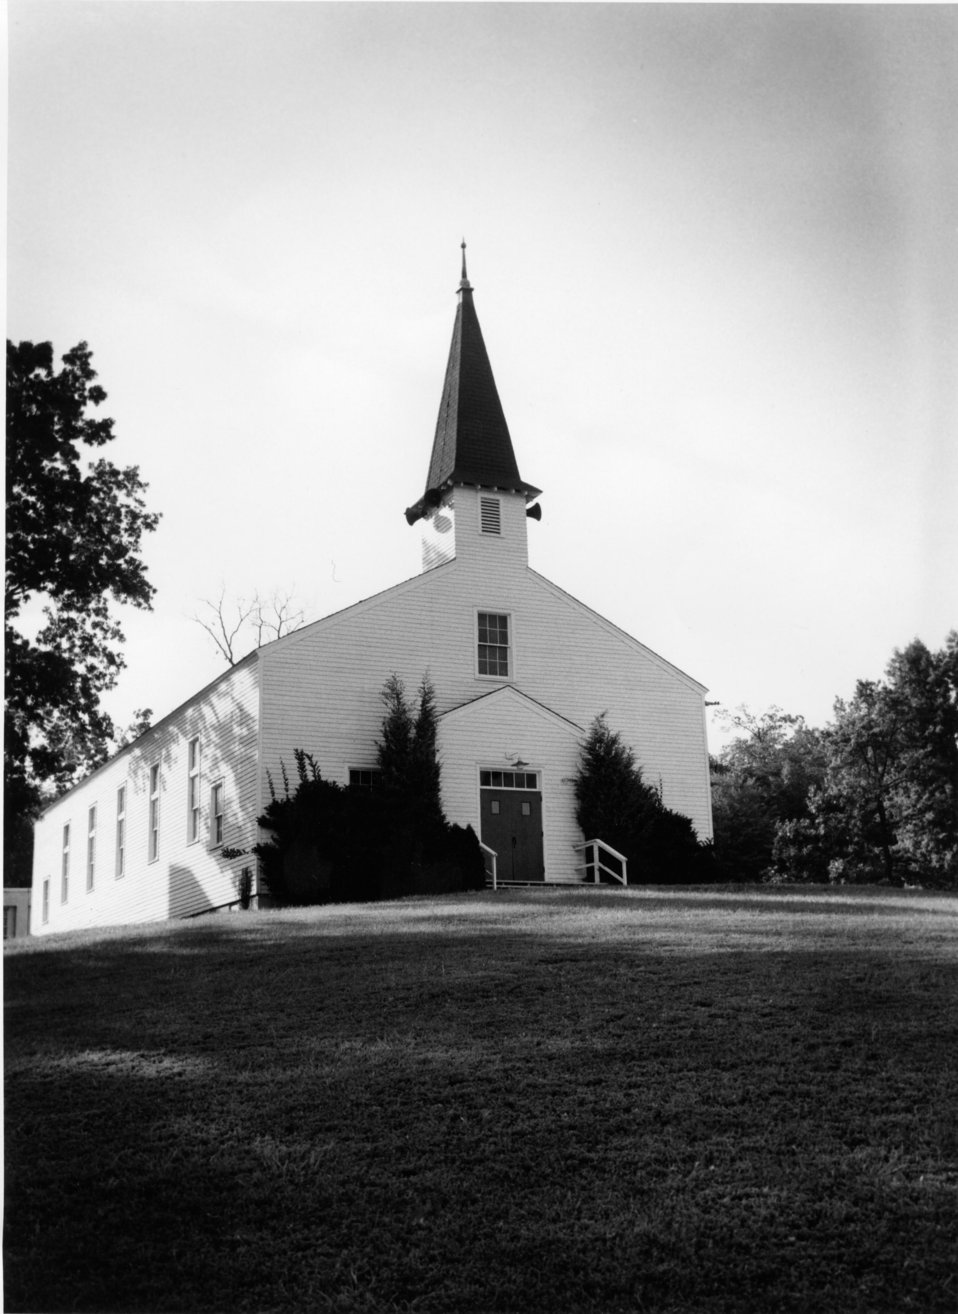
Church activity at Oak Ridge